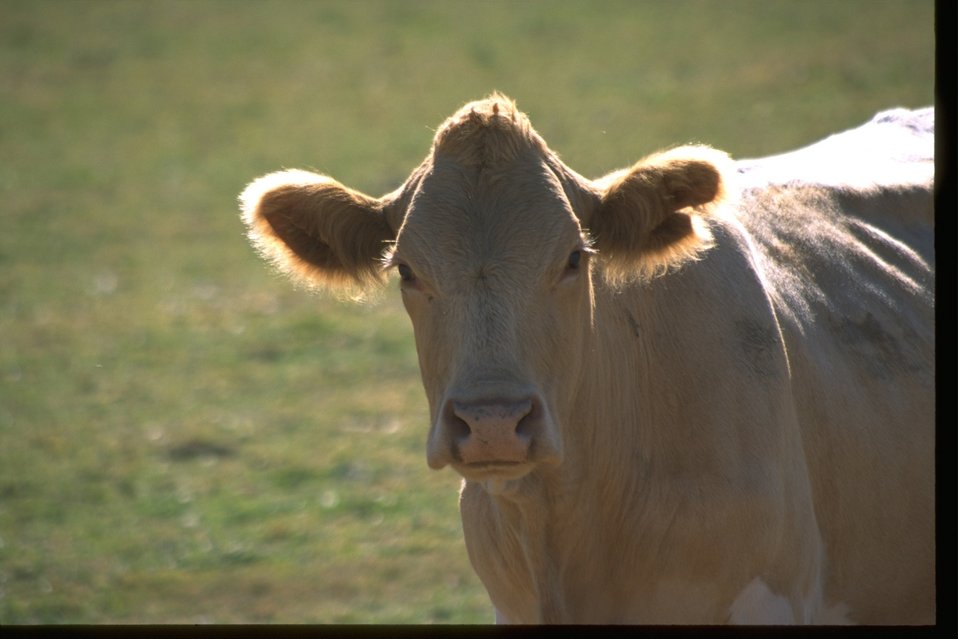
Cow in private pasture near section 2 of the John Day River.